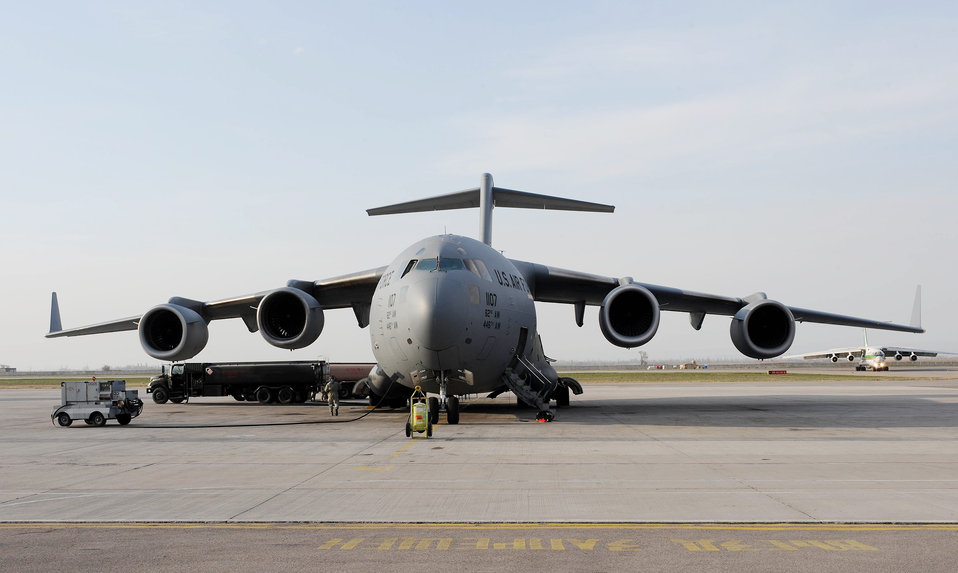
Manas Airmen move troops into Afghanistan

A petroleum, oil and lubricants specialist pumps gas from a fuel truck into a C-17 Globemaster III before its next mission to Afghanistan April 2, 2010, at the Transit Center at Manas, Kyrgyzstan. In March, 376th Expeditionary Logistics Readiness Squadron POL flight Airmen issued 12,500,102 gallons of gas to cargo, tanker and other combat support aircraft.